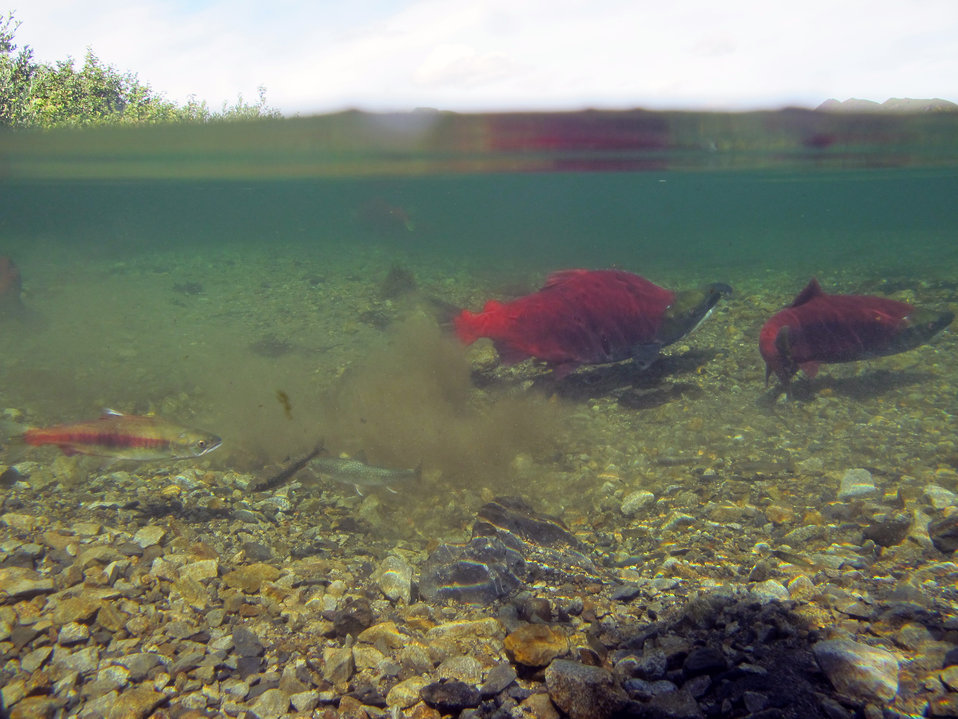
Action shot!

Here we have 2 spawning sockeyes that just disturbed gravel making a redd, 2 Dolly Varden char hungry for eggs, and one jack sockeye hoping to sneak in and fertilize the eggs. USFWS/Katrina Mueller